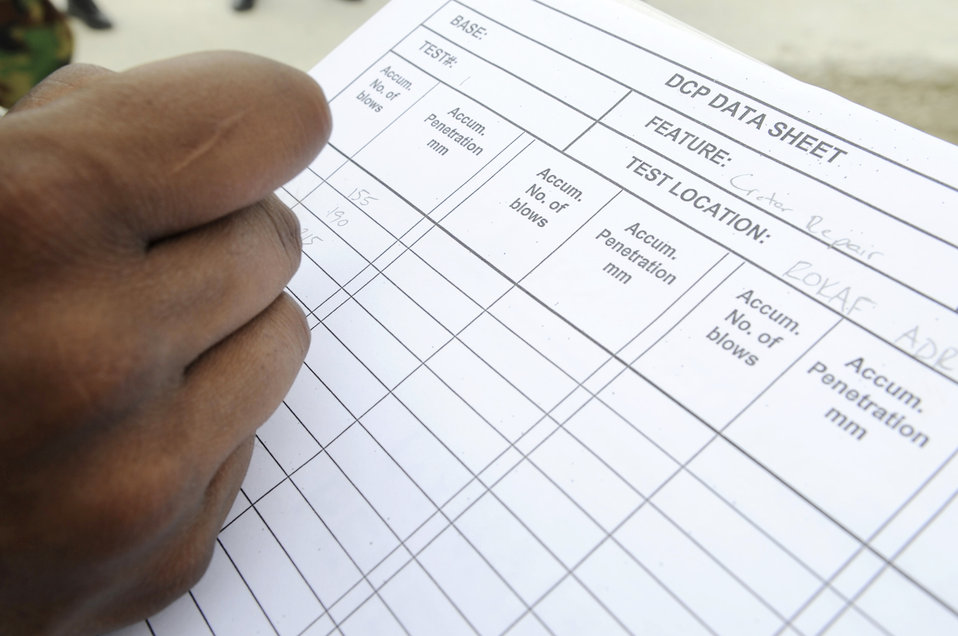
Osan AB's airfield damage repair team train with South Korean air force

Senior Airman Christopher Davis records data from a dynamic cone pentrometer test Aug. 19 at Jungwon Air Base, Republic of Korea. The reading is used to determine if the crater is sufficiently filled and compacted to withstand aircraft landings. This process was part of a joint combined rapid runway repair training exercise with Airmen from the South Korean air force's 19th Tactical Fighter Wing and 91st Air Civil Engineer Group. Airman Davis is assigned to the 51st Civil Engineer Squadron at Osan Air Base, South Korea.